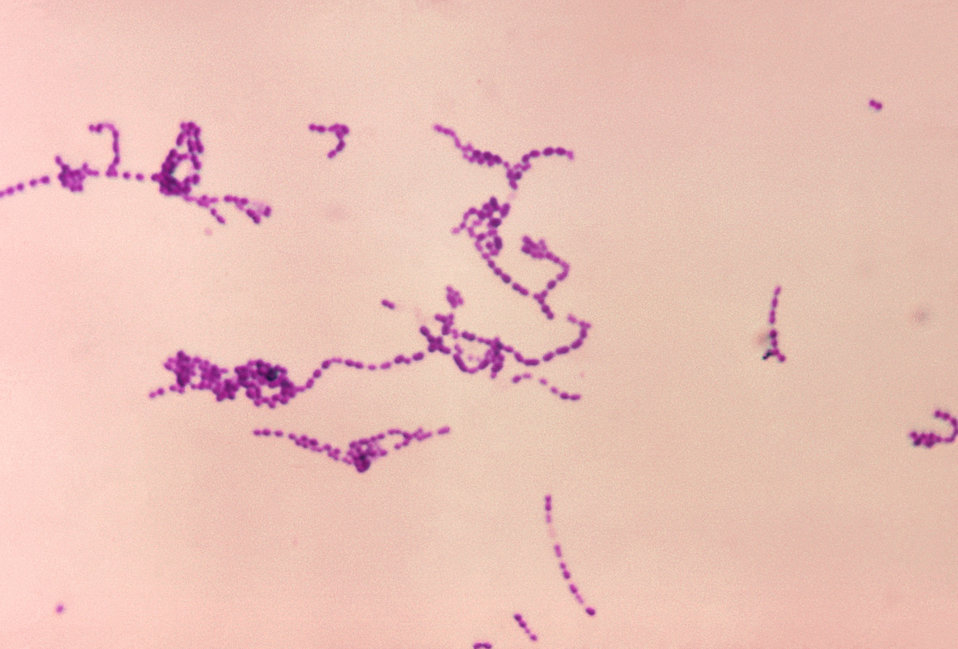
A photomicrograph of Streptococcus spp. bacteria using Gram stain technique.